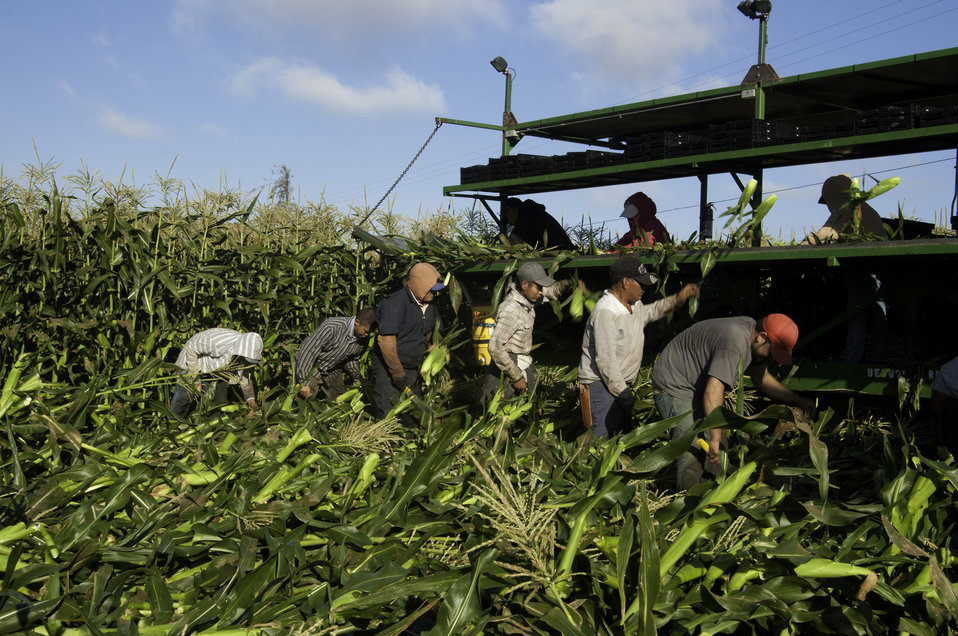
Migrant workers harvest corn on Uesugi Farms in Gilroy, CA on Wednesday, Aug. 28, 2013.